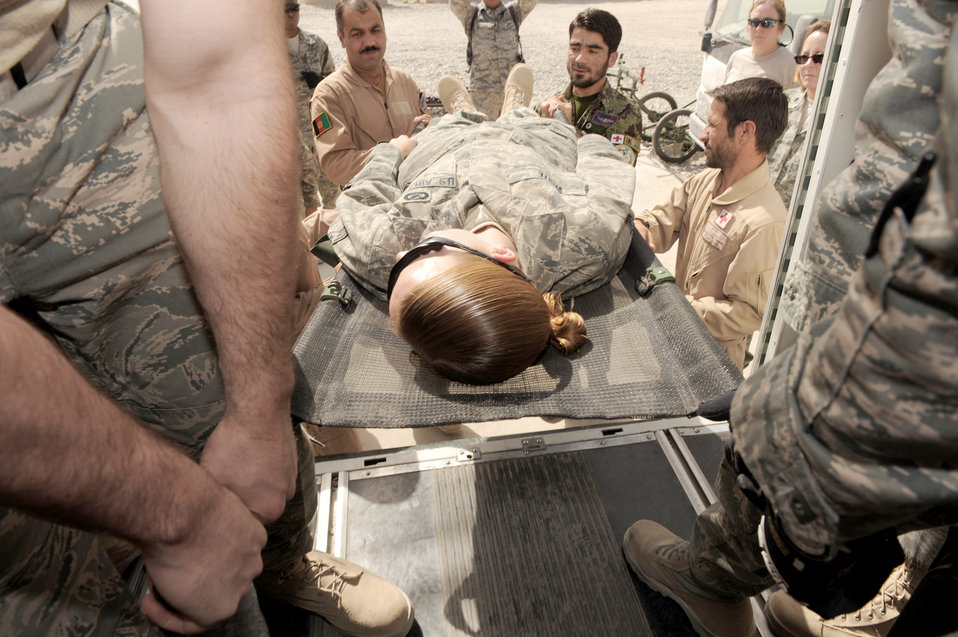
Medics showcase patient care concepts to Afghan airmen

Afghan Air Force flight medics transfer a simulated patient to an ambulance during an orientation offered by 451st Expeditionary Aeromedical Evacuation Squadron members Sept. 8, 2010, at Kandahar Airfield, Afghanistan.